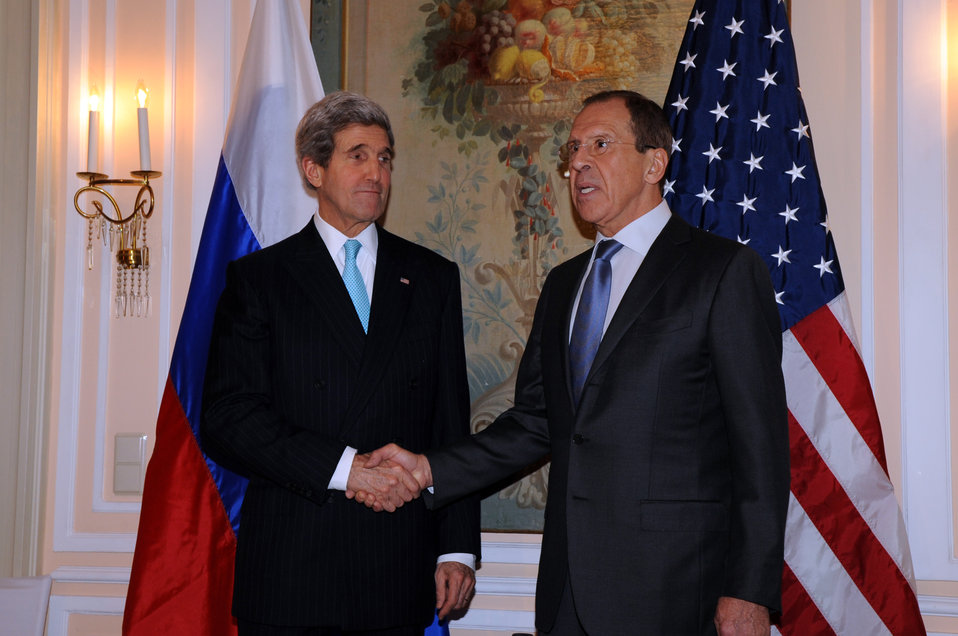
Secretary Kerry Meets With Russian Foreign Minister Lavrov at Munich Security Conference

U.S. Secretary of State John Kerry shakes hands with Russian Foreign Minister Sergey Lavrov before a bilateral meeting on the sidelines of the Munich Security Conference in Germany on January 31, 2014.